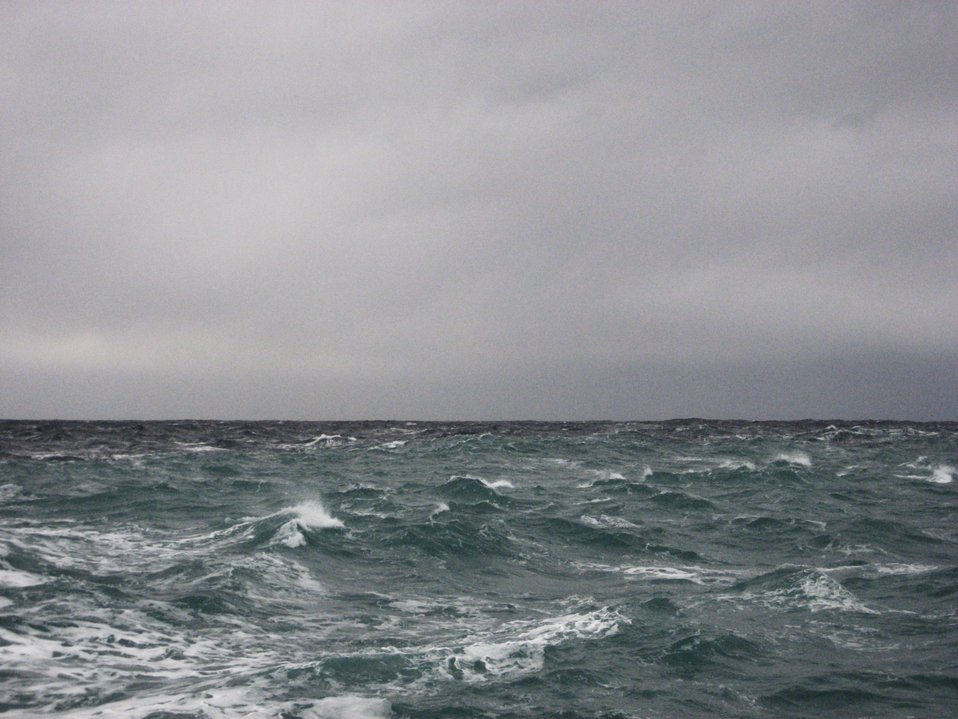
The demarcation line between glacial meltwater coming from the Glacier Bay region and oceanic water in the Gulf of Alaska.